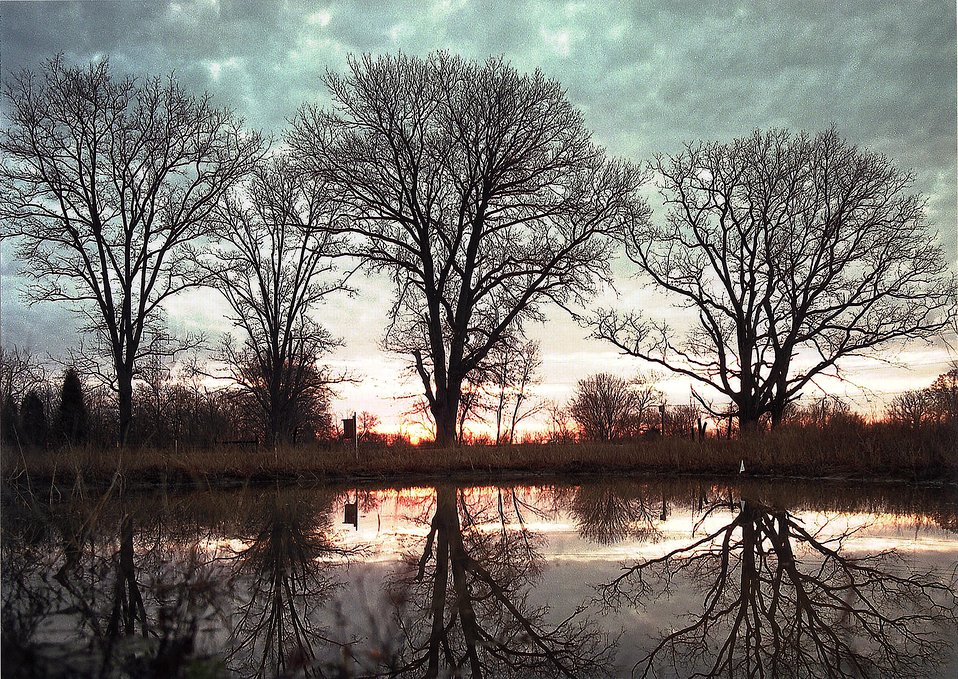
Fernald wetland ecosystem.

This early morning photo was taken at the 12 acre wetland ecosystem located along the north east perimeter of the former uranium processing site. More than 3000 shrubs and trees and 30 species of grasses and wildflowers native to Southeastern Ohio have been planted in this area previously used for pasture.